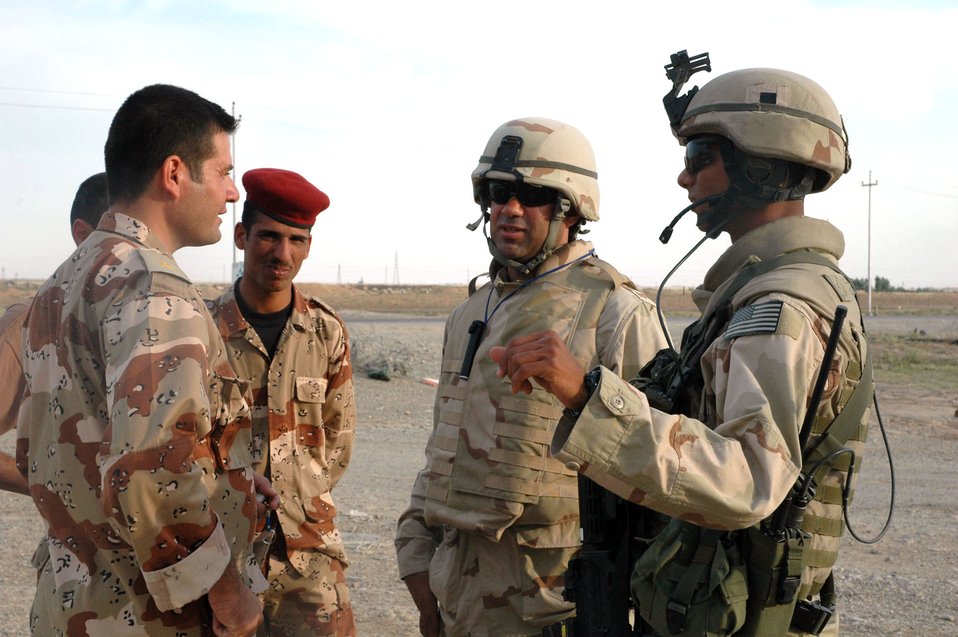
Security forces begin transfer of mission to Iraqis

First Lt. Justin Banez (right) checks in with an Iraqi lieutenant through Ayob Hajibadri, an interpreter, at a traffic checkpoint near the city of Kirkuk, Iraq, on Monday, May 22, 2006. Airmen of the 506th Expeditionary Security Forces Squadron conduct patrols in the base defense zone of Kirkuk. Lieutenant Banez is deployed from Moody Air Force Base, Ga.